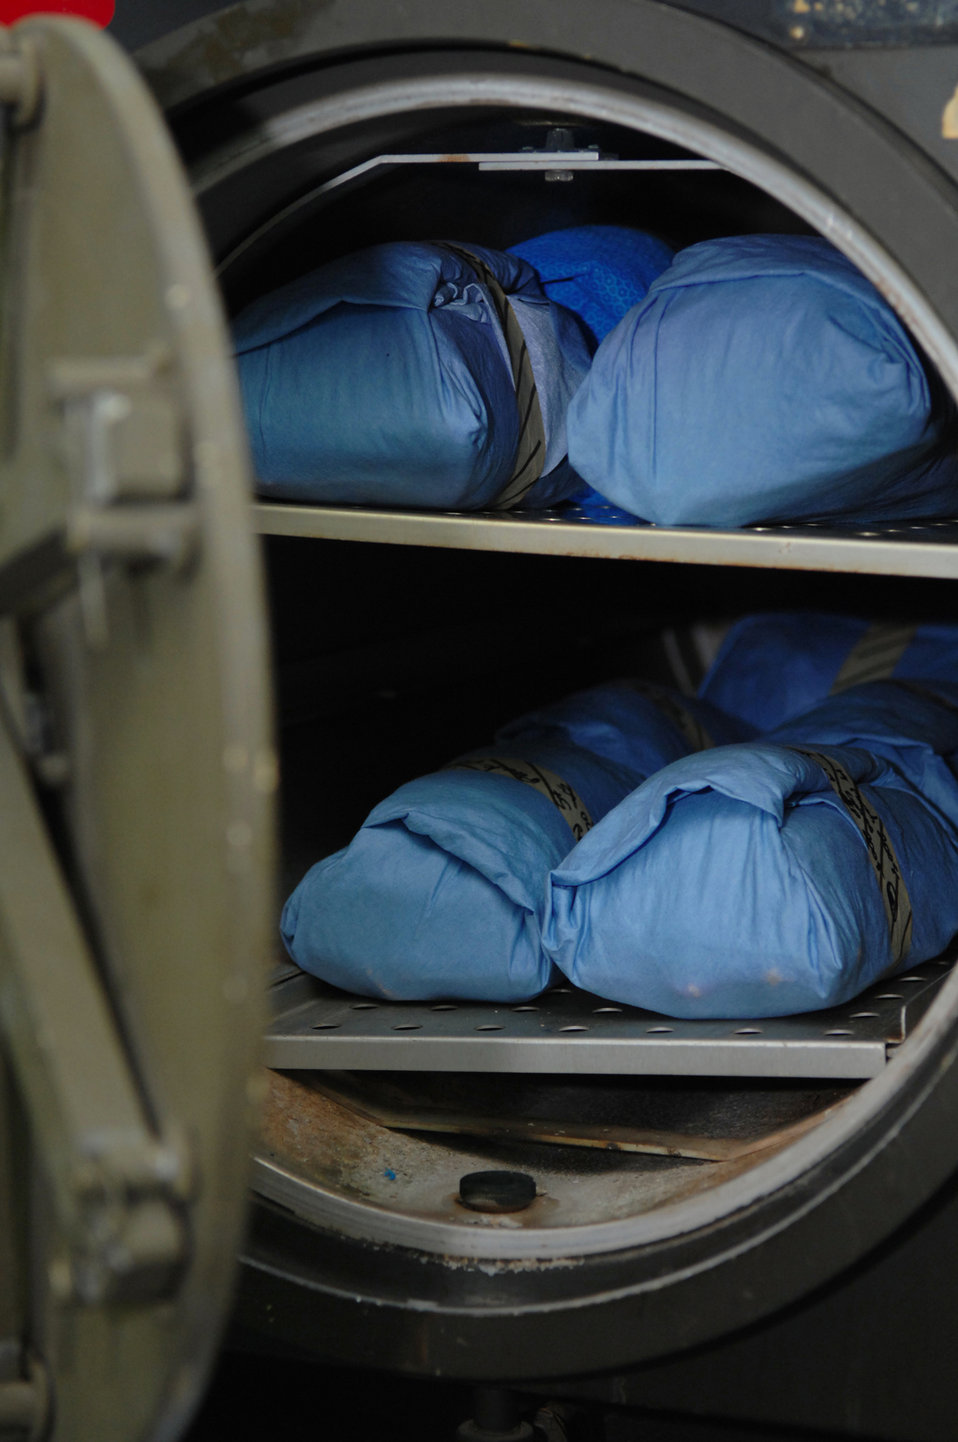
No germs allowed

The medical tool sterilization process is conducted in two steps as tools are first placed in an ultrasonic bath and then are wrapped and placed in the sterilizer March 19 at Balad Air Base, Iraq. The 332nd Expeditionary Medical Group runs the Air Force Theater Hospital at Balad AB and provides a wide range of medical services to Airmen, Soldiers, Sailors and Marines throughout the Iraqi theater of operations. The hospital is the equivalent of a level one trauma center with more than 1,200 patients are seen by medical personnel each month, of which more than 650 are trauma cases.